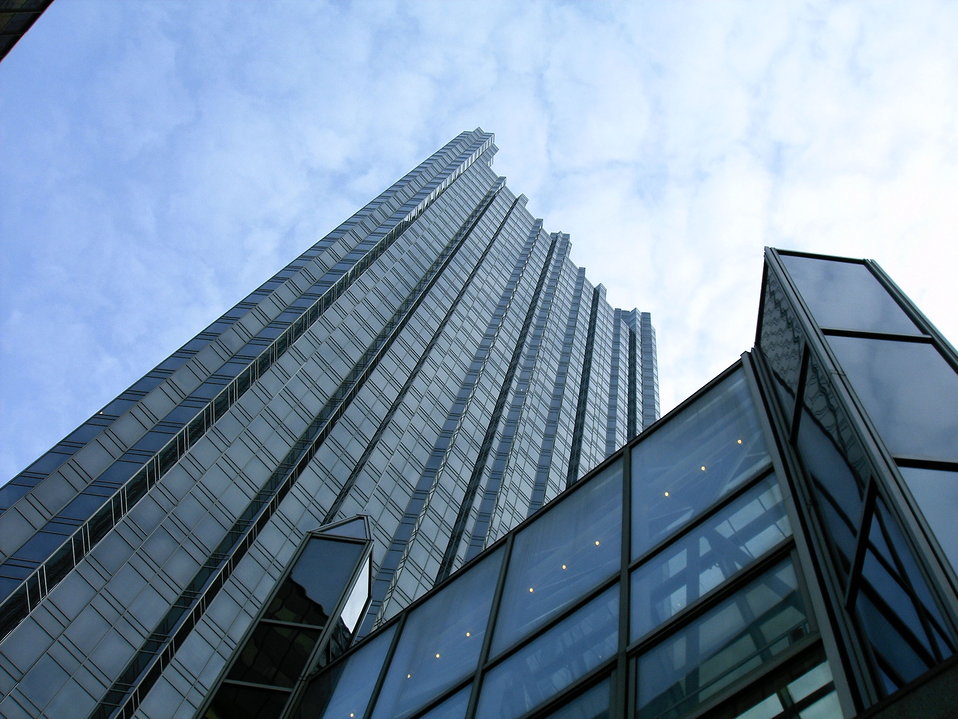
1 PPG Place, Pittsburgh, Pennsylvania